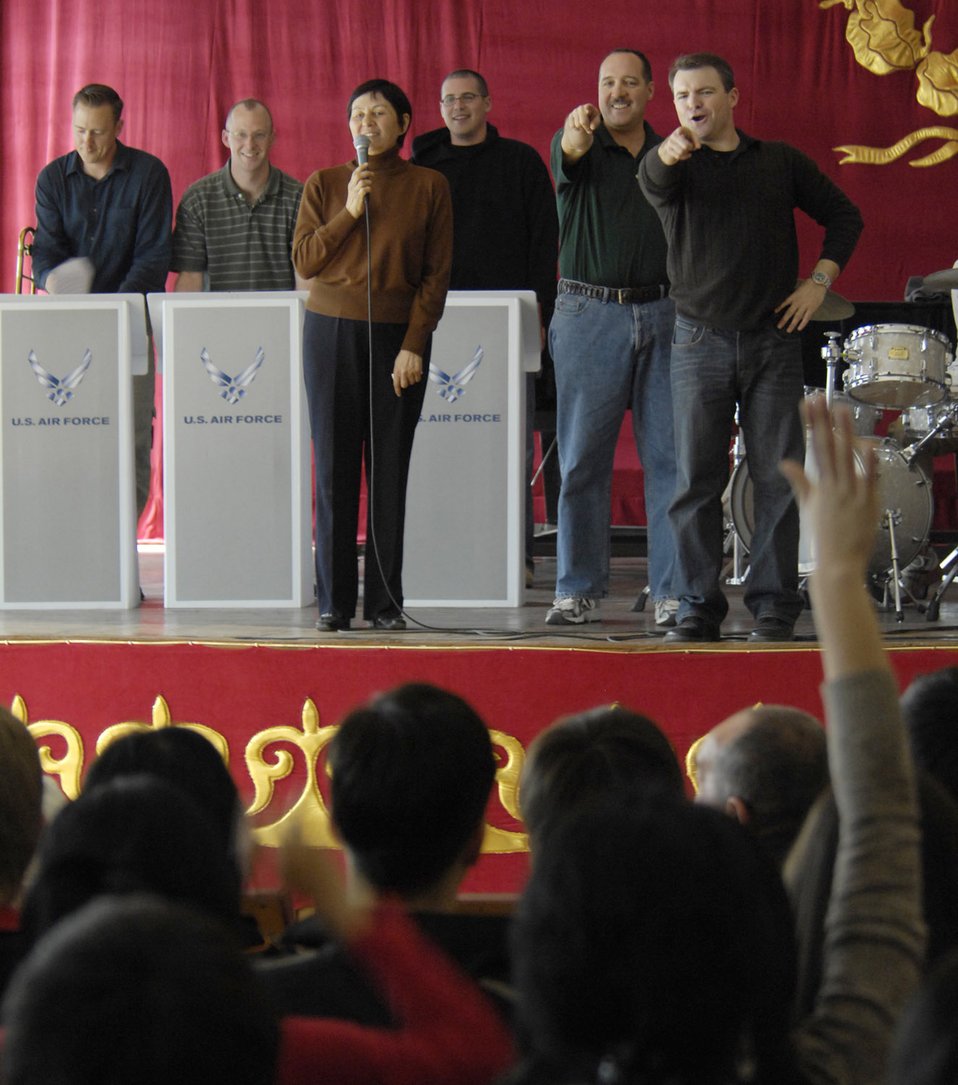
Band members connect with Kyrgyzstan music students

U.S. Air Forces Central Band Hot Brass members get the audience involved during their March 26 performance for Bishkek College of Music in Kyrgyzstan. The band performed for Manas Air Base Airmen and local villages and schools during their six-day trip to Kyrgyzstan.